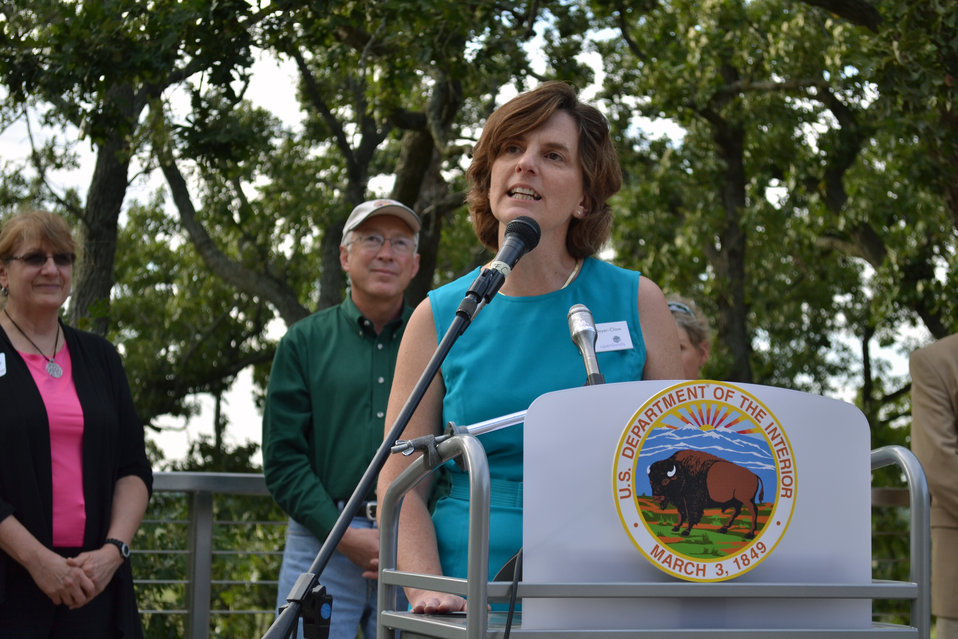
Openlands Policy Director Lenore Beyer-Clow discussed how the new refuge will have positive economic, as well as conservation, impacts on the region.